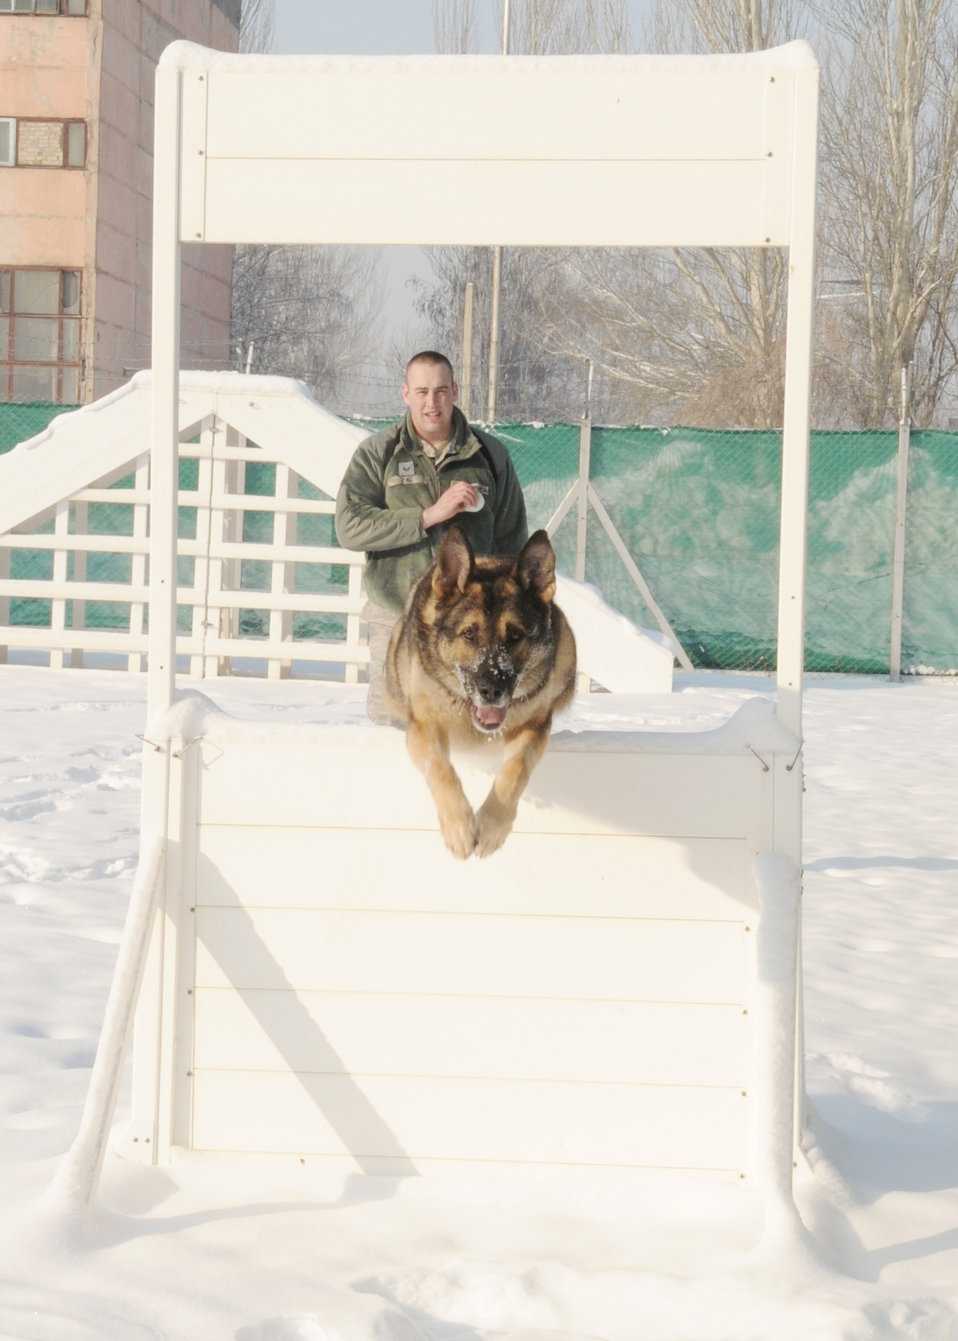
K-9 without a canine keeps working

Military working dog Arek runs an obstacle course for his handler, Staff Sgt. Patrick Lau, Feb. 10, 2010, at the Transit Center at Manas, Kyrgyzstan. Both are deployed to the 376th Expeditionary Security Forces Squadron from Hill Air Force Base, Utah.